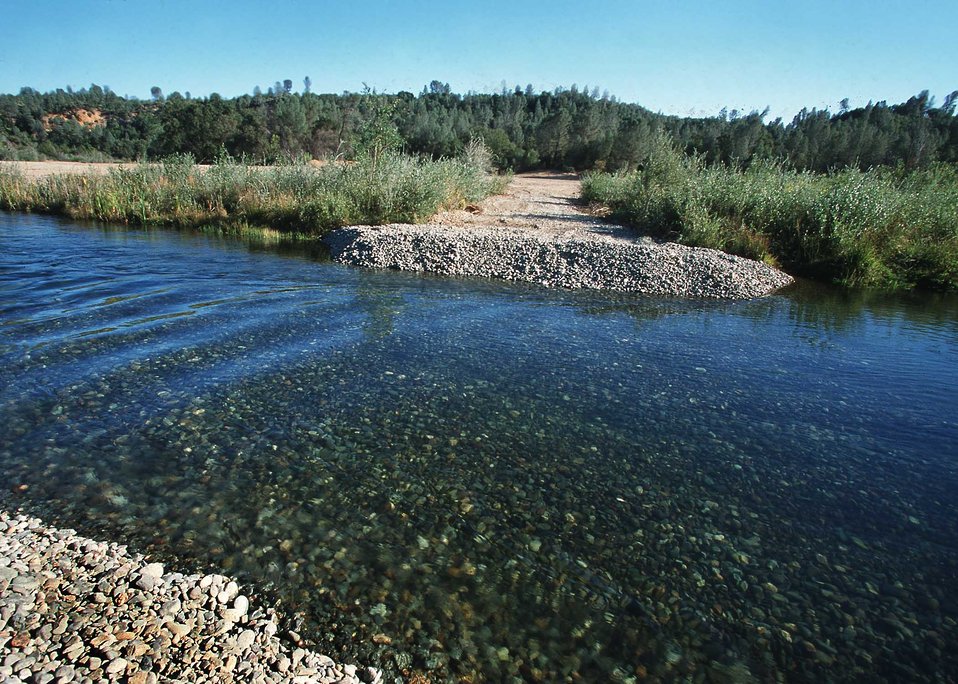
Gravel provides needed spawning habitat for salmon.